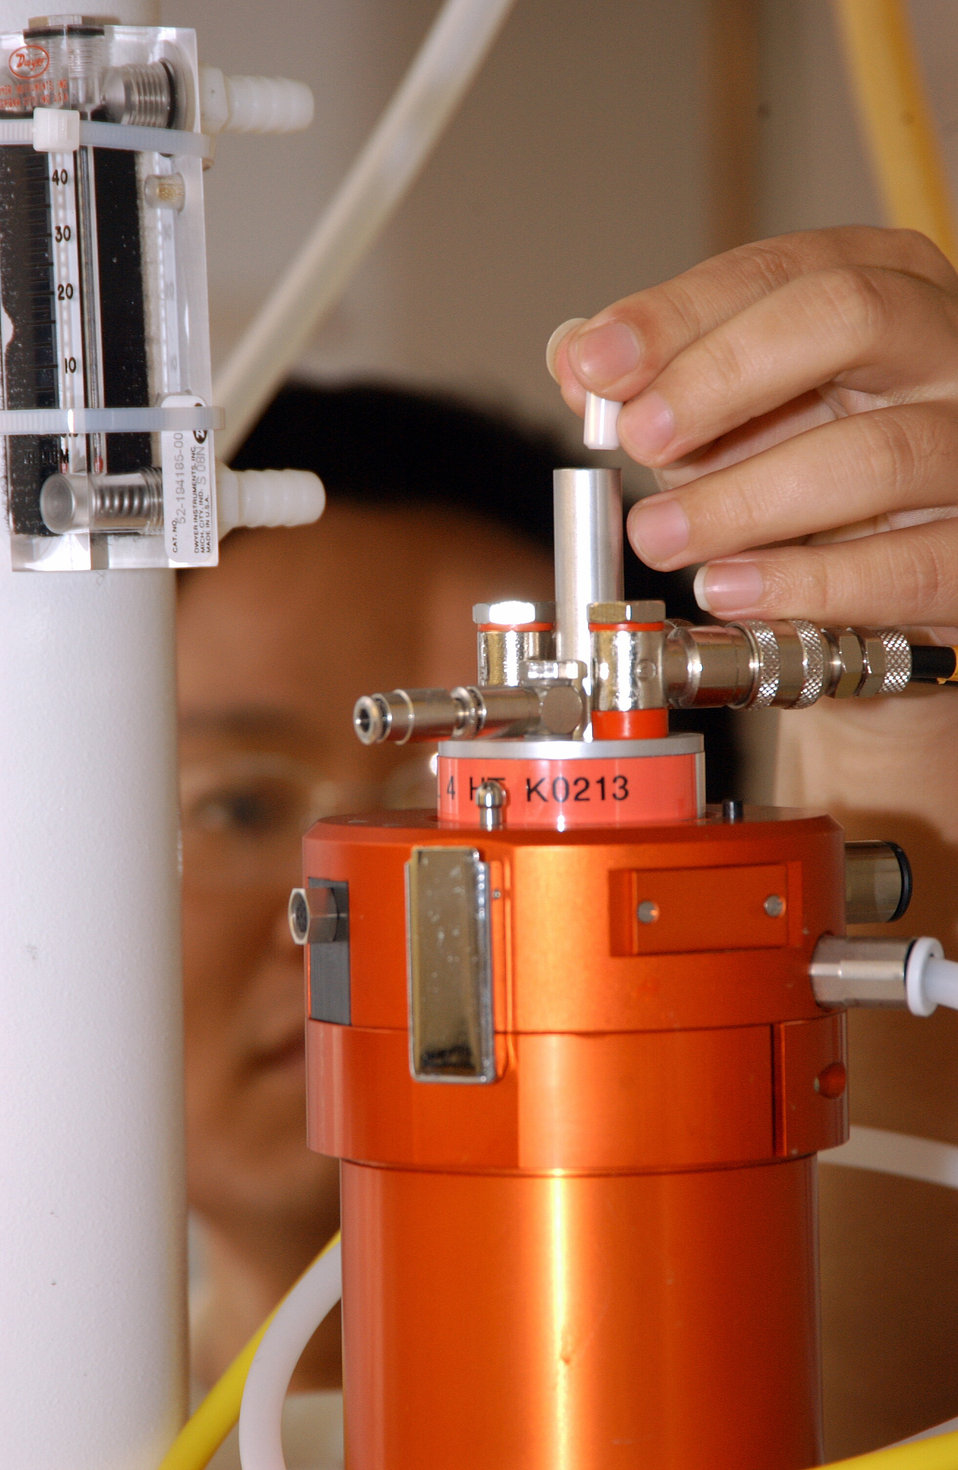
AMES LABORATORY SCIENTIST QIANG CHEN LOADS A SAMPLE HOLDER INTO THE PROBE OF A NUCLEAR MAGNETIC RESONANCE SPECTROSCOPE TO STUDY THE STRUCTURE OF FUEL-CELL MEMBRANE MATERIAL.
Ames Laboratory is a research lab for the Department of Energy that seeks solution to energy related problems through the exploration of chemical, engineering, materials, mathematical and physical.